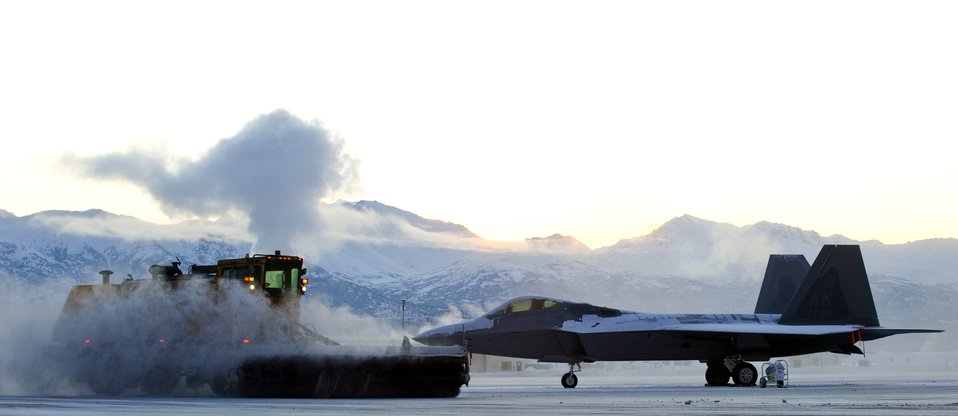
Baby, it's cold outside

Airmen in the 3rd Civil Engineer Squadron snow removal flight maneuver around a snow-covered F-22 Raptor at Elmendorf Air Force Base, Alaska, Jan. 13 to keep the runways cleared for Alaska NORAD Region operations.